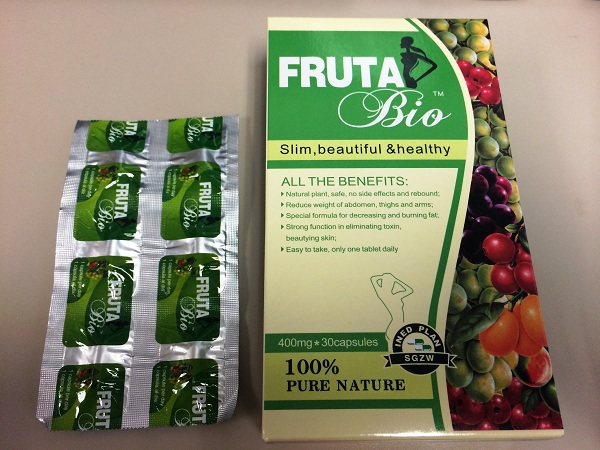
Fruta Bio

February 4, 2014 - The FDA is advising consumers not to purchase or use Fruta Bio, a product promoted and sold as a dietary supplement for weight loss. The product was found to contain undeclared sibutramine and/or phenolphthalein.